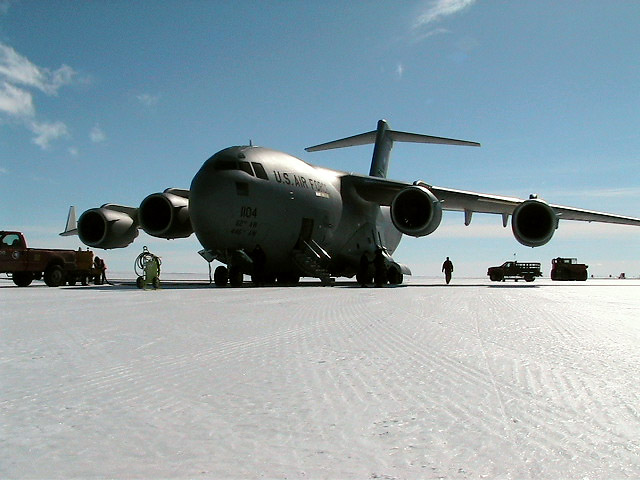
McChord Airmen fuel Operation Deep Freeze

A C-17 Globemaster III sits on the Pegasus ice runway Dec. 1 near McMurdo Station, Antarctica.